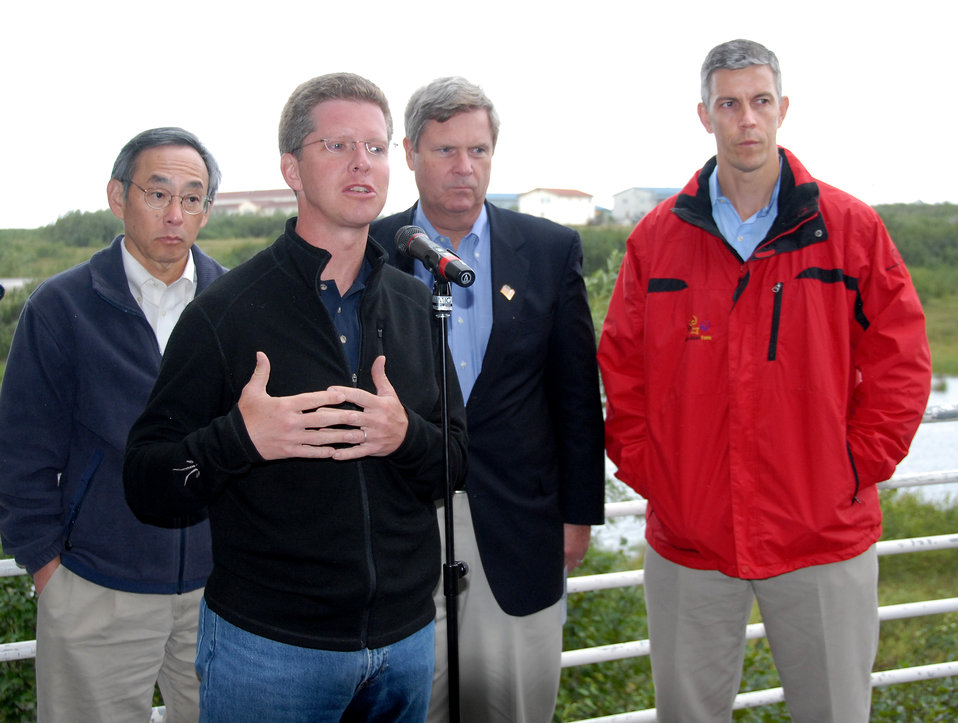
Rural Tour 0239

Rural Tour Alaska Aug 2009